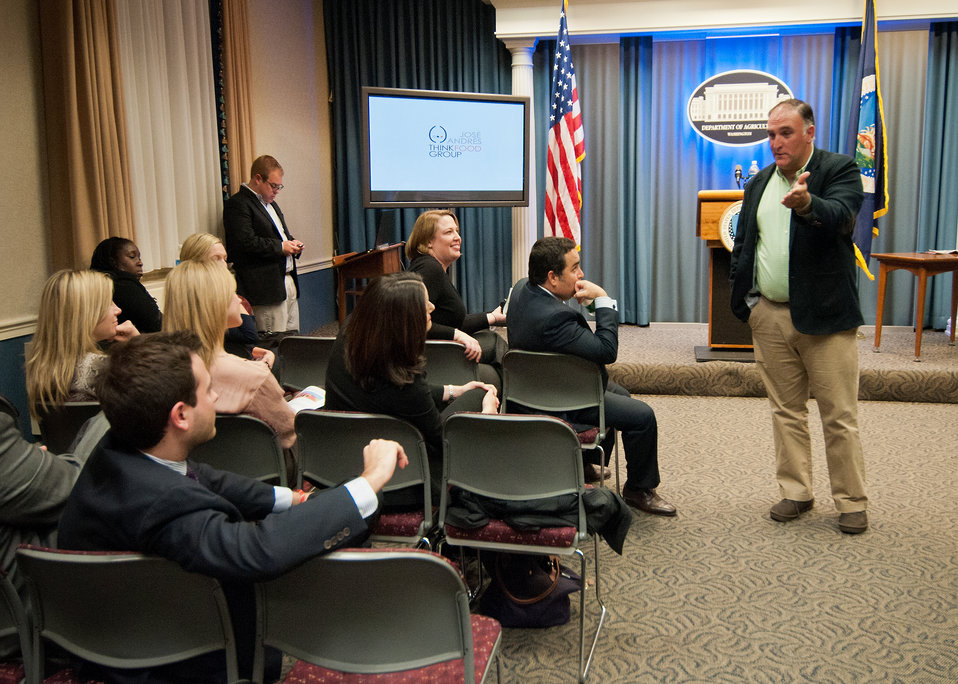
Chef Jose Andres, Chef/Owner, Think Food Group the guest speaker at the kick-off meeting of the United States Department of Agriculture White House Liaison Weekly Political Appointee Meeting for the New Year in Washington, DC, Thursday, January 20, 2012. Chef Andres discussed creativity and how it can contribute to food policy.